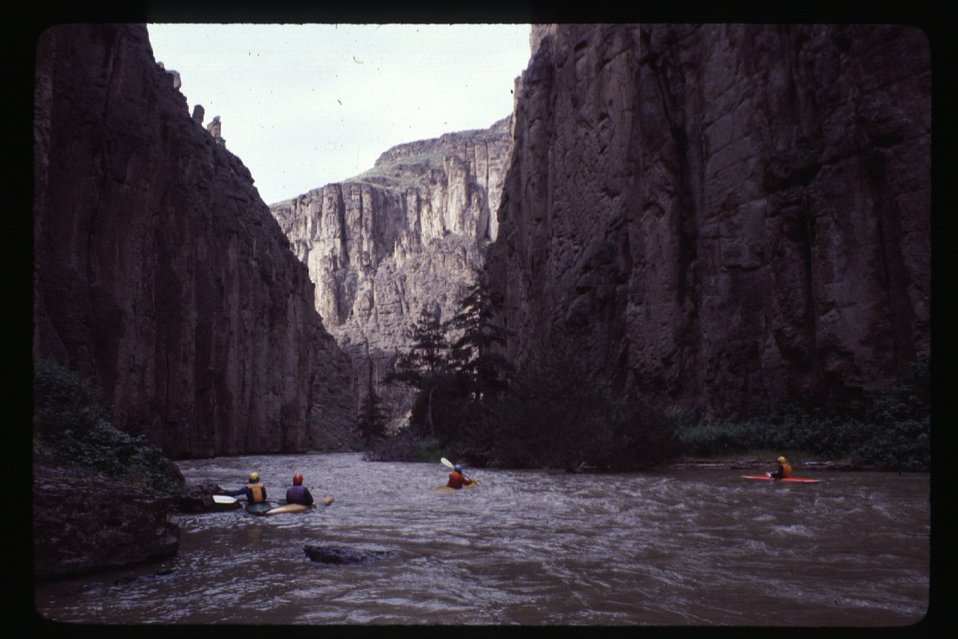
Kayakers on Bruneau River Owyhee Field Office LSRD Lower Snake River District